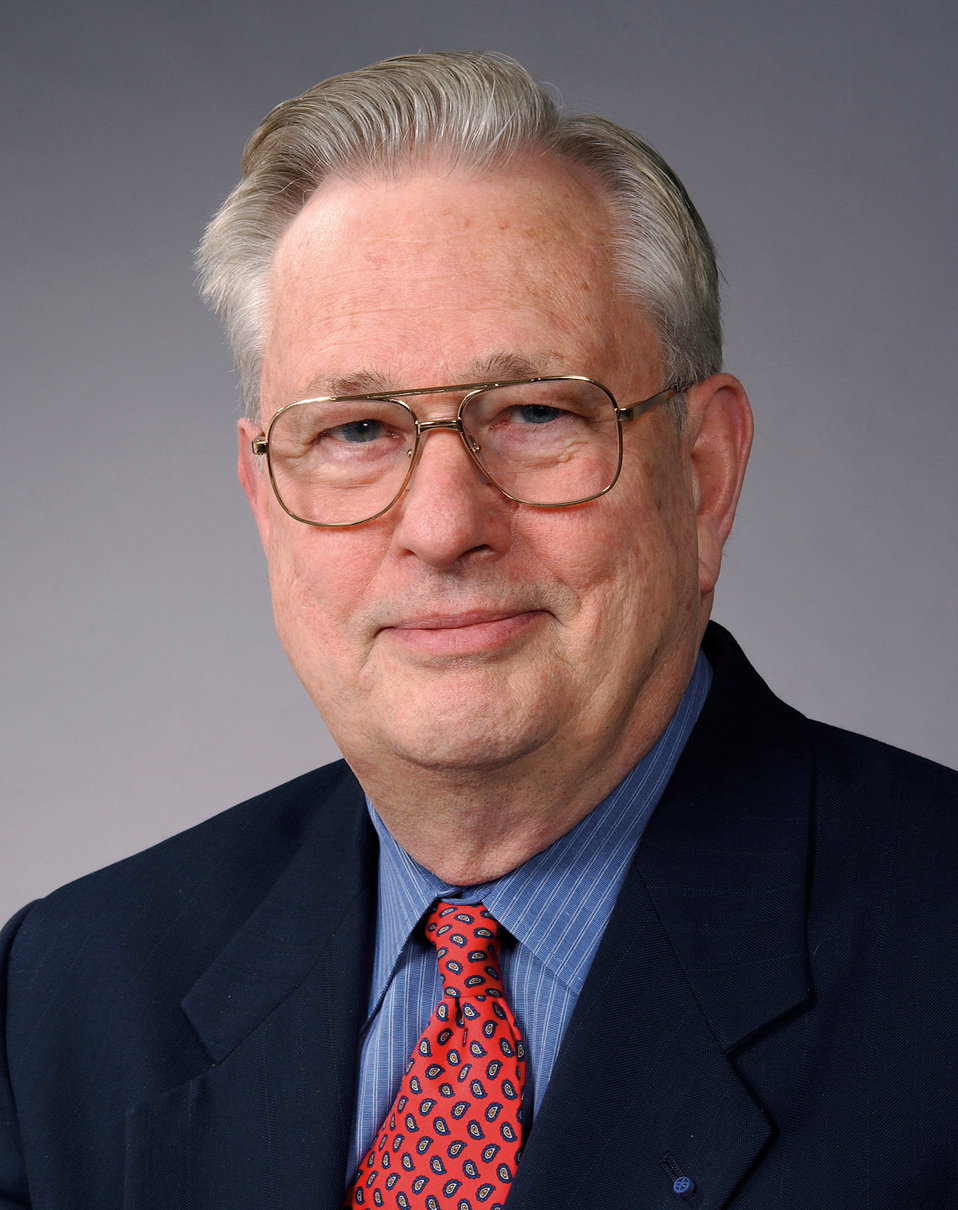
Arden L. Bement Jr.

Former NIST Director, Arden L. Bement Jr.